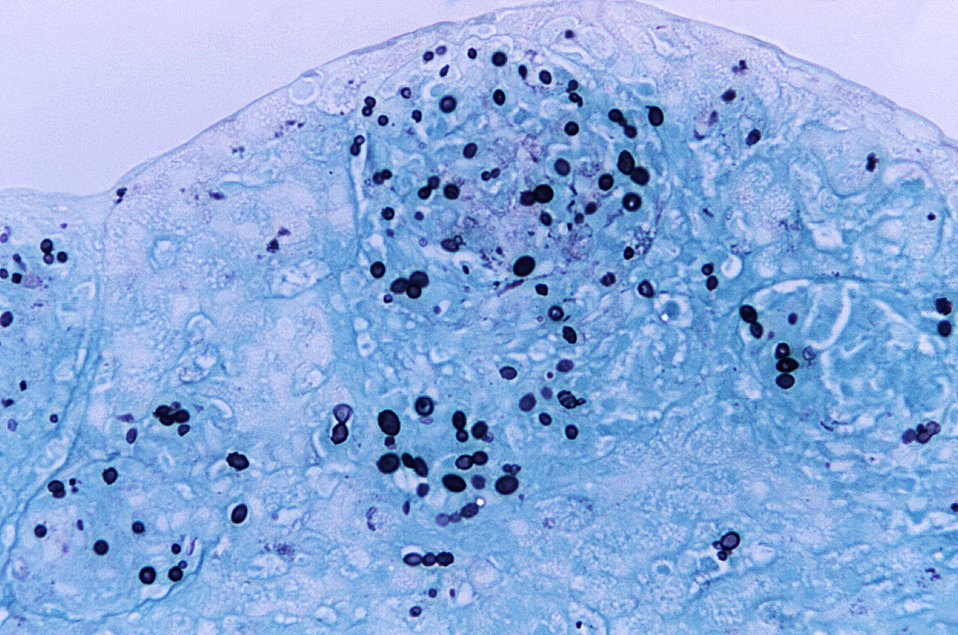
Magnified 300X, this photomicrograph revealed the presence of Histoplasma capsulatum var. duboisii fungal organisms in an unidentified tissue sample.What is histoplasmosis?